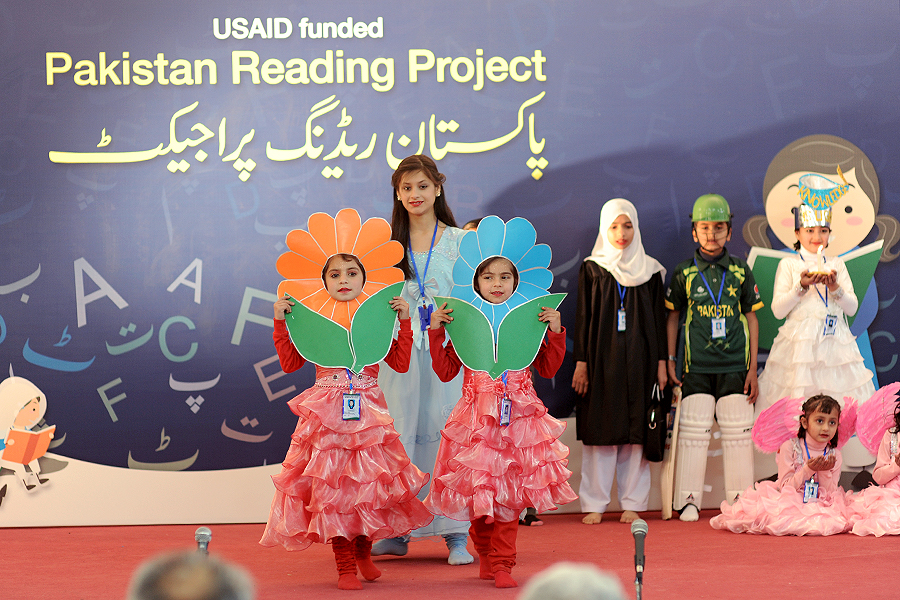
United States and Pakistan Launch the Pakistan Reading Project